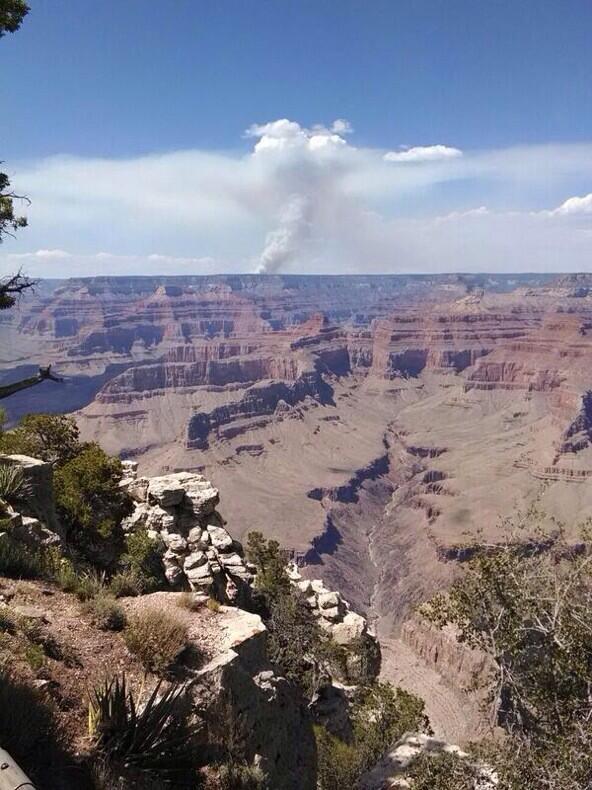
Looking at the Galahad Fire from the South Rim on May 27, 2014. The Galahad Fire on the North Rim on the Walla Valley Peninsula in the Grand Canyon National Park in Arizona began on May 23, 2014 from lightening and has consumed 2, 950 acres to date and is 30% contained.